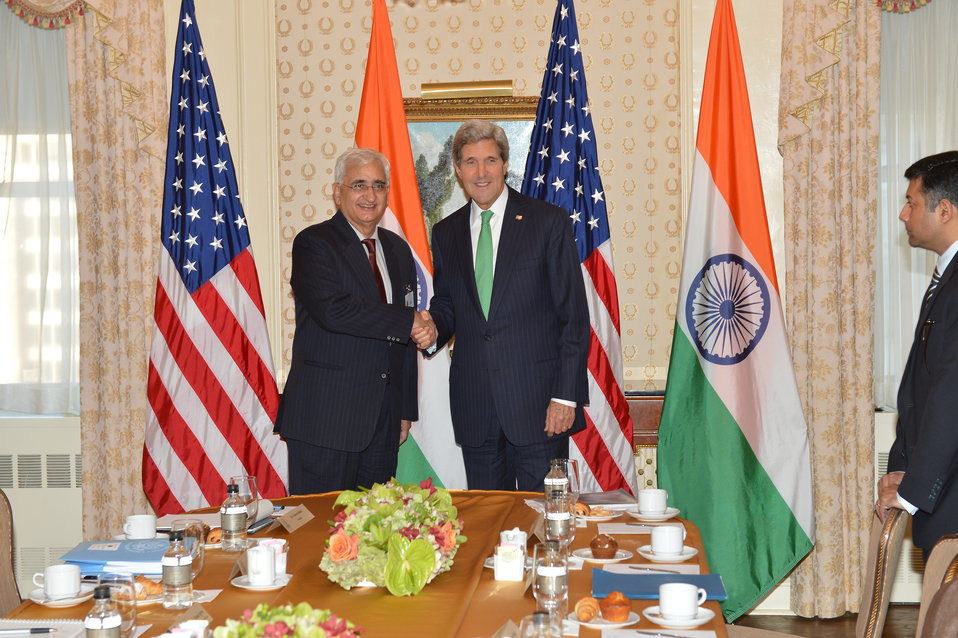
Secretary Kerry Meets With Indian External Affairs Minister Khurshid

U.S. Secretary of State John Kerry holds a bilateral meeting with Indian External Affairs Minister Salman Khurshid in New York City on September 25, 2013.